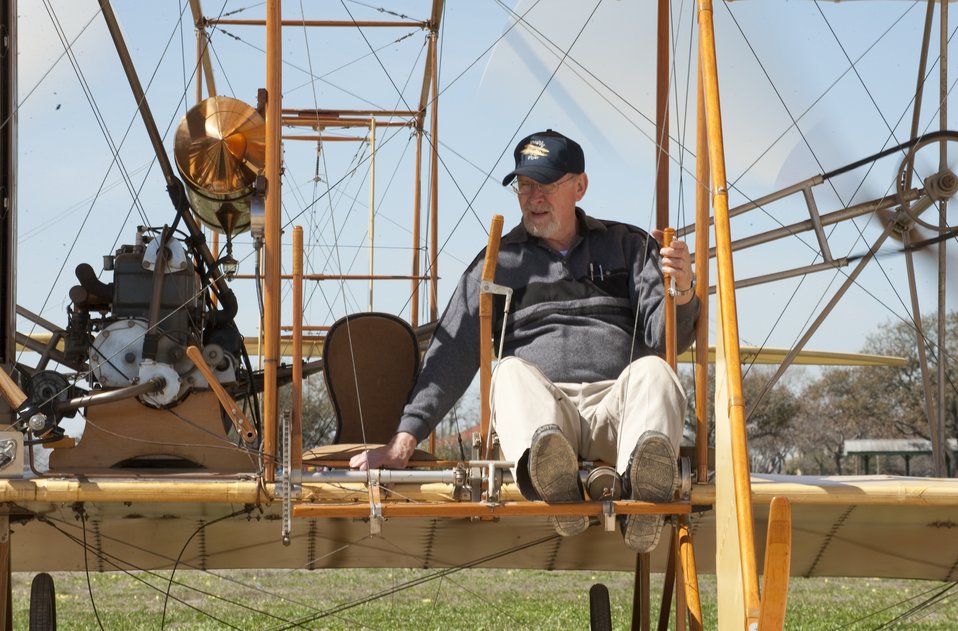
Wright

Don Gum was ready to taxi when the Ford Model A engine warmed up next to him and propellers were spinning behind he and the Wright